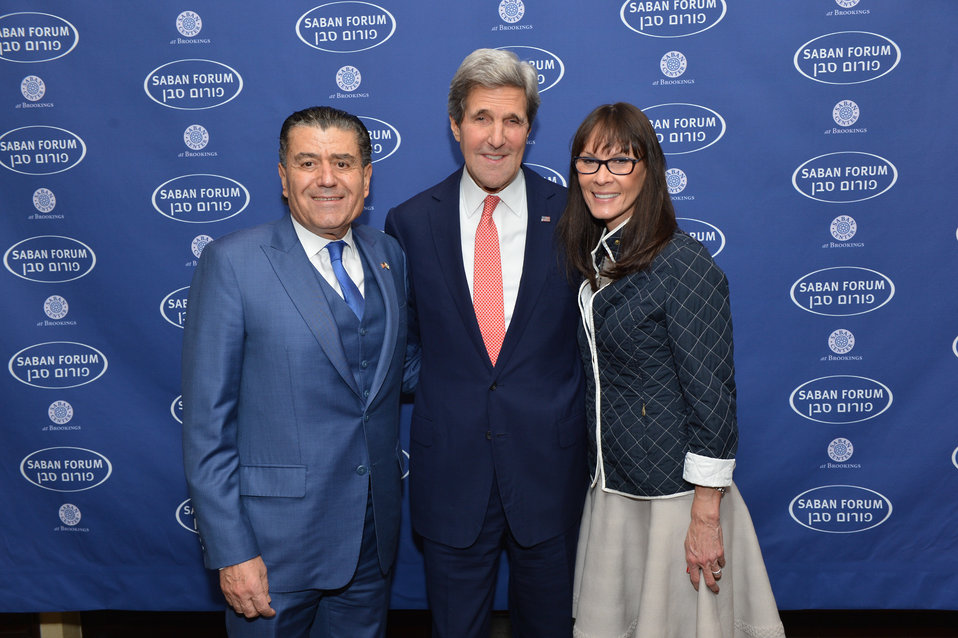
Secretary Kerry, Chairman Saban, and Senior Fellow Rubin Pose for a Photo

U.S. Secretary of State John Kerry poses for a photo with Saban Forum chairman Haim Saban, and Brookings Non-Resident Senior Fellow Alisa Rubin during the Brookings Institution's 10th annual Saban Forum, 'Power Shifts: U.S.-Israel Relations in a Dynamic Middle East,' in Washington, D.C., on December 7, 2013.